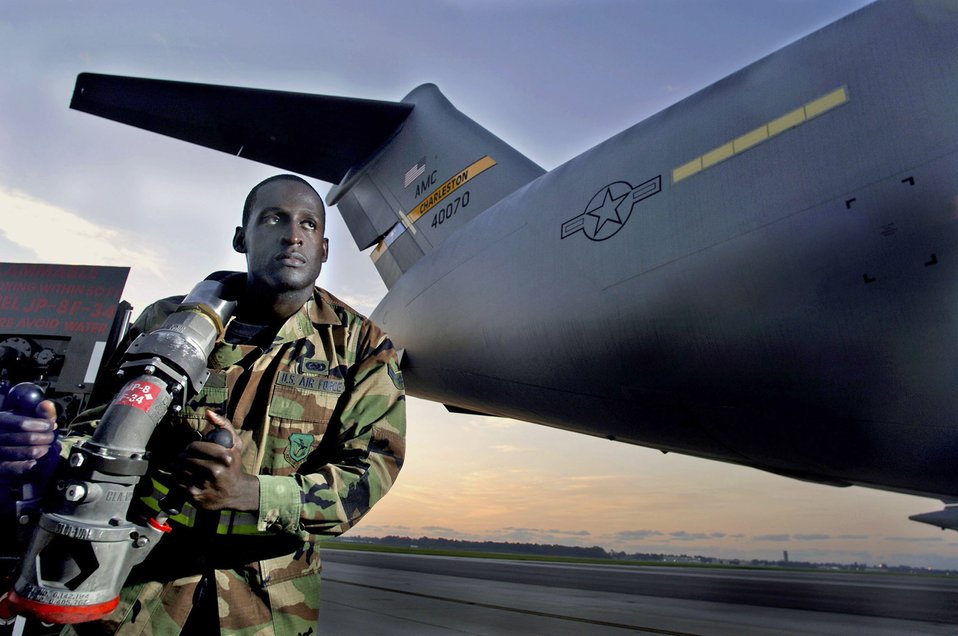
Fill 'er up

Airman 1st Class Michael Brown prepares to refuel a C-17 Globemaster III at Charleston Air Force Base, S.C. Airman Brown is assigned to the 437th Logistics Readiness Squadron.